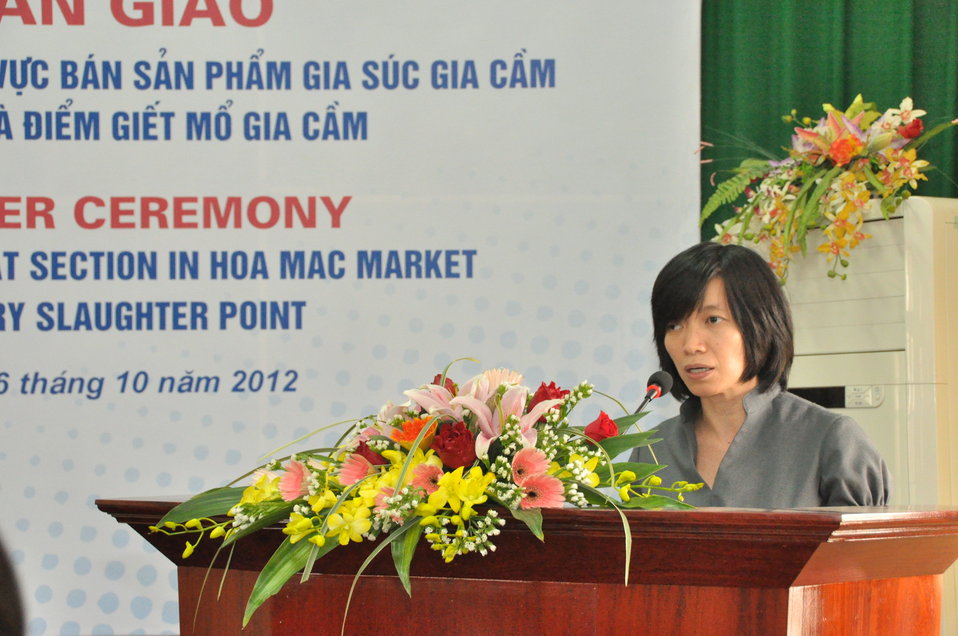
Handover Ceremony Hoa Mac Market, Ha Nam

October 26, 2012 Photo: Richard Nyberg, @USAIDVietnam